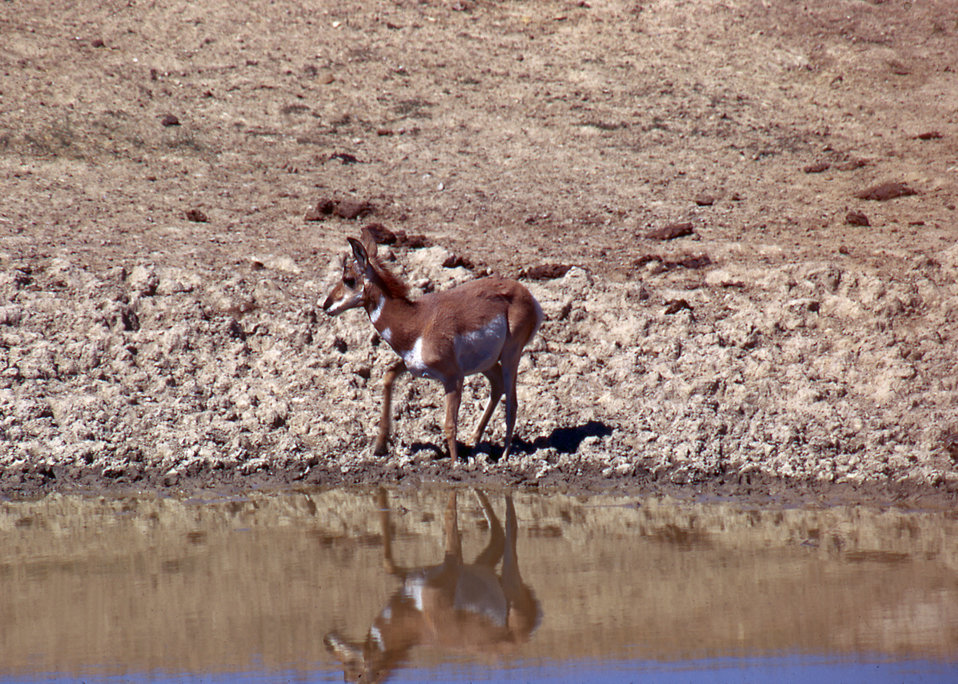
Antelope on a Wildlife Range in Arizona.